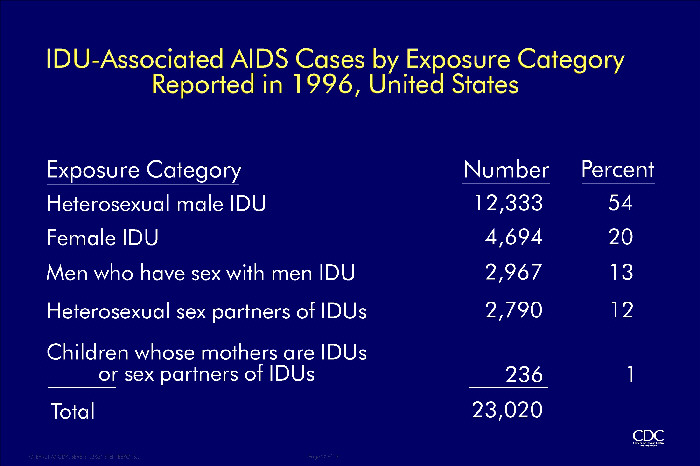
IDU-Associated AIDS Cases by Exposure Category Reported in 1996, United States